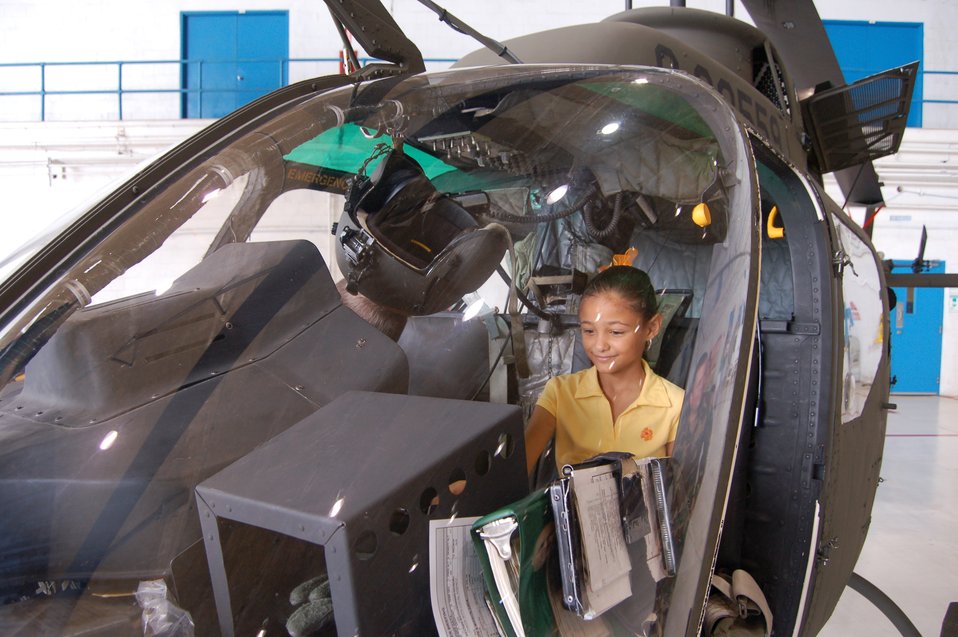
Visit

A child sits in a customs and border patrol OH-58 helicopter during a March 22 open house at Coast Guard Air Station Borinquen, Puerto Rico. Coast Guard Air Station Borinquen is located at what used to be Ramey Air Force Base, which closed in 1973. Approximately 500 visitors got a firsthand look at today?s military members and equipment in Puerto Rico, and to see an historic C-54 cargo plane used during the Berlin Airlift.